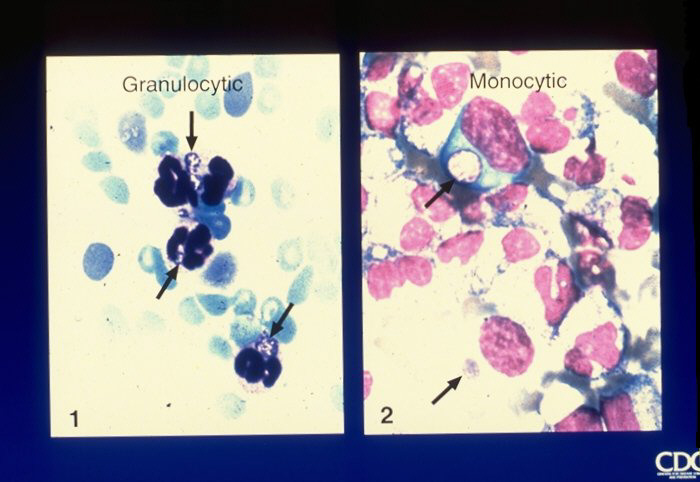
Etiologic Agents of Ehrlichioses